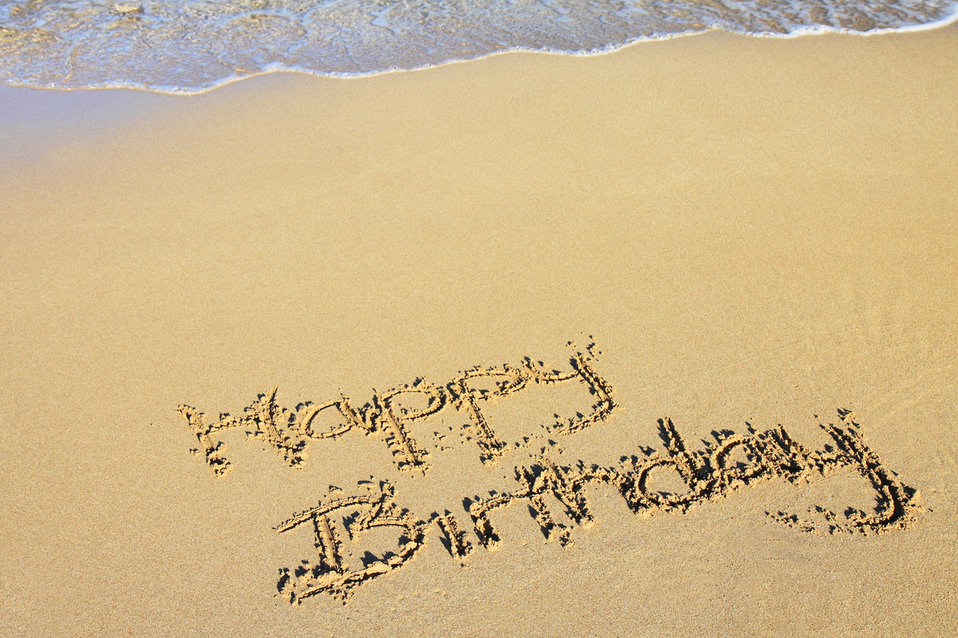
Happy birthday in sand

Happy birthday written in sand on beach.